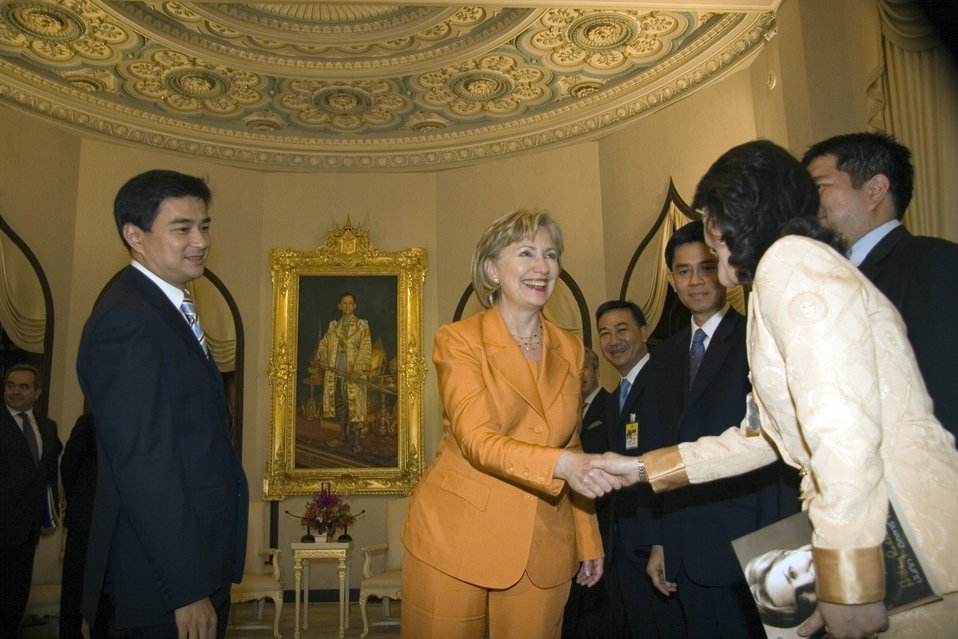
U.S.-Thailand Bilateral Meeting

U.S. Secretary of State Hillary Rodham Clinton is introduced to Anchalee Vanich, Deputy Secretary General to the Prime Minister, by Thai Prime Minister Abhisit Vejjajiva prior to the bilateral meeting at Government House in Bangkok, Thailand July 21, 2009.